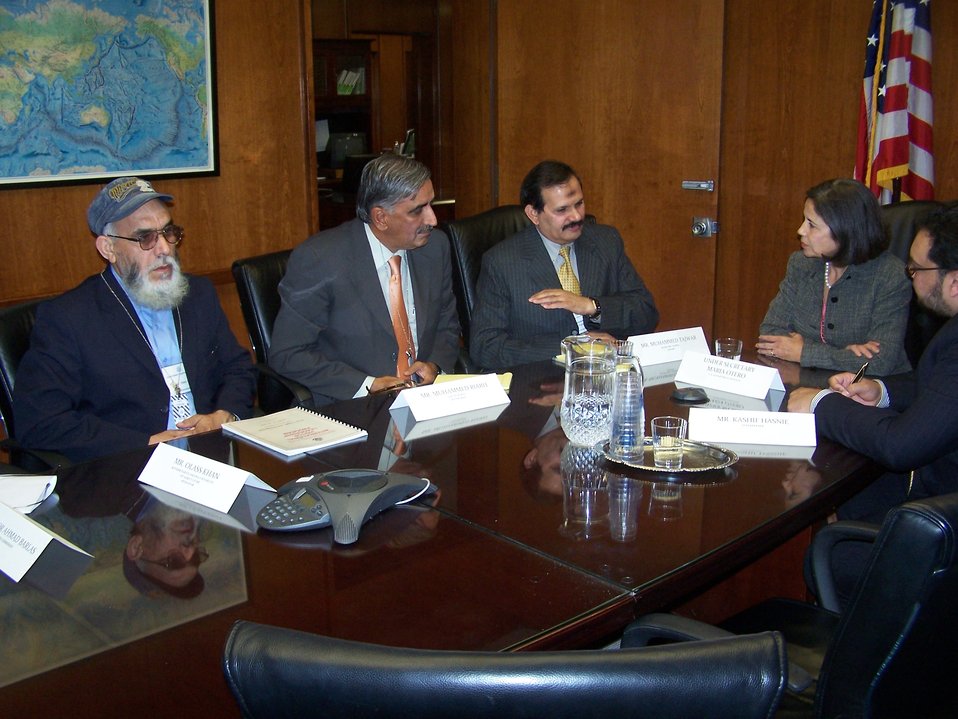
Under Secretary Otero Chairs a Working Group With Pakistani Water Experts

U.S. Under Secretary of State for Democracy and Global Affairs Maria Otero chairs a meeting with a group of Pakistani water experts who are visiting the United States this month as part of the International Visitor Leadership Program (IVLP) at the U.S Department of State in Washington, D.C., on October 19, 2010.